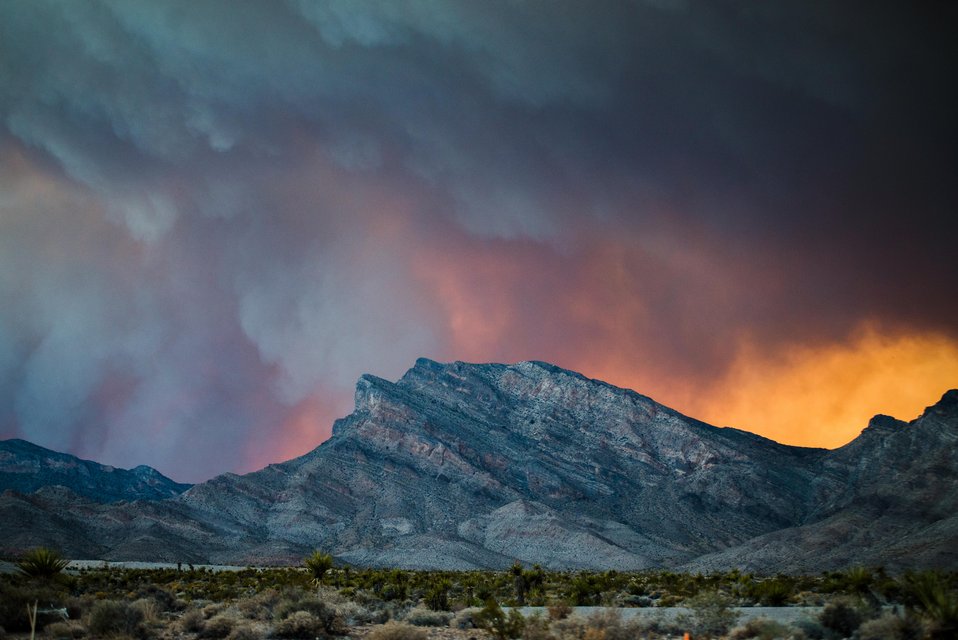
The La Madre fire is part of the Carpenter Fire in the Toiyabe National Forest near Humboldt, NV was caused by a lightning strike on Jul. 1, 2013. The fire has consumed nearly 27,881acres and is presently 70% contained.